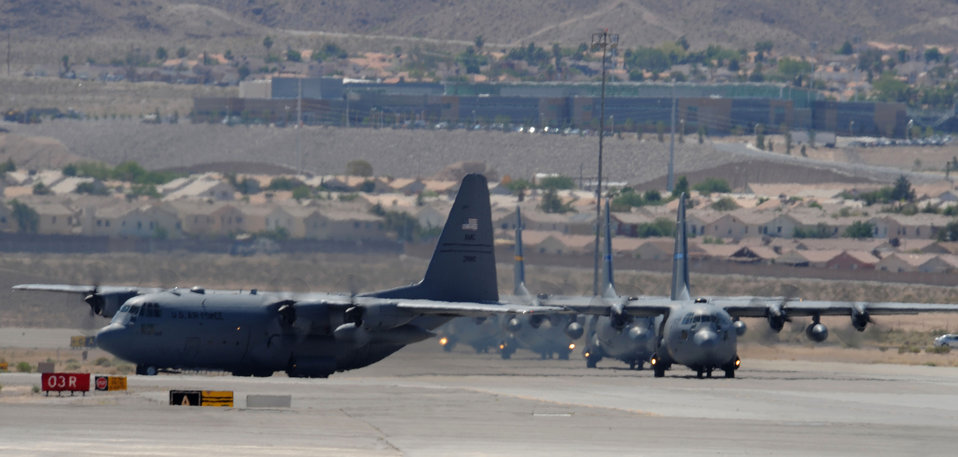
Testing mobility forces

Several C-130 Hercules prepare for takeoff May 20 at Nellis Air Force Base, Nev., while participating in the Mobility Air Forces Exercise. Approximately 12 U.S. Air Force bases participate in the MAFEX at the U.S. Air Force Weapons School twice a year, testing the crew ability of C-17 Globemaster IIIs and C-130s to join together in formation at a specific time and location to drop a brigade-size force anywhere in the world.